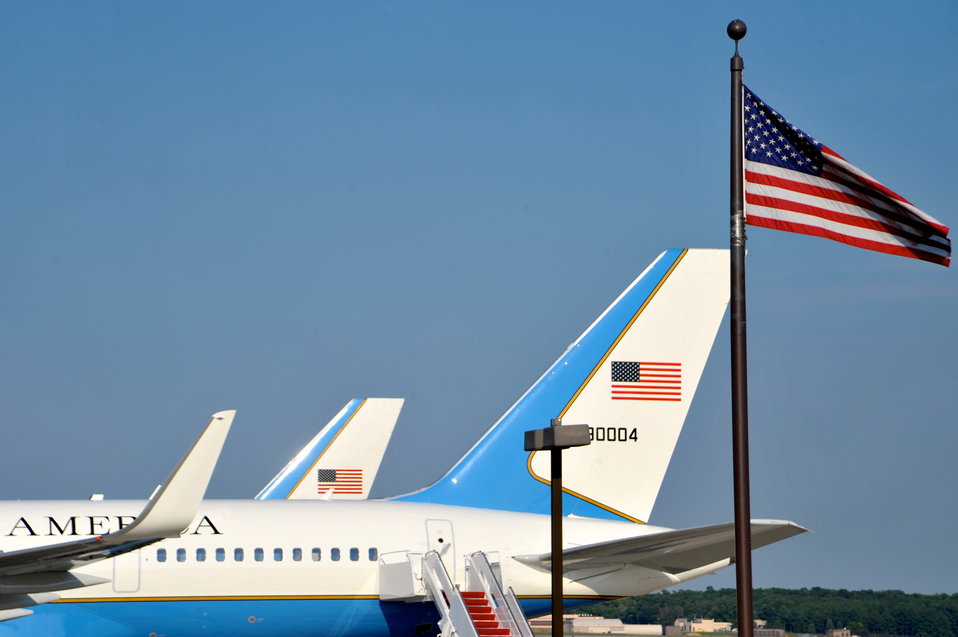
American Flags Fly at Andrews Air Force Base

American flags fly beside U.S. Secretary of State John Kerry's plane before his departure from Andrews Air Force Base for Amman, Jordan, on July 15, 2013.